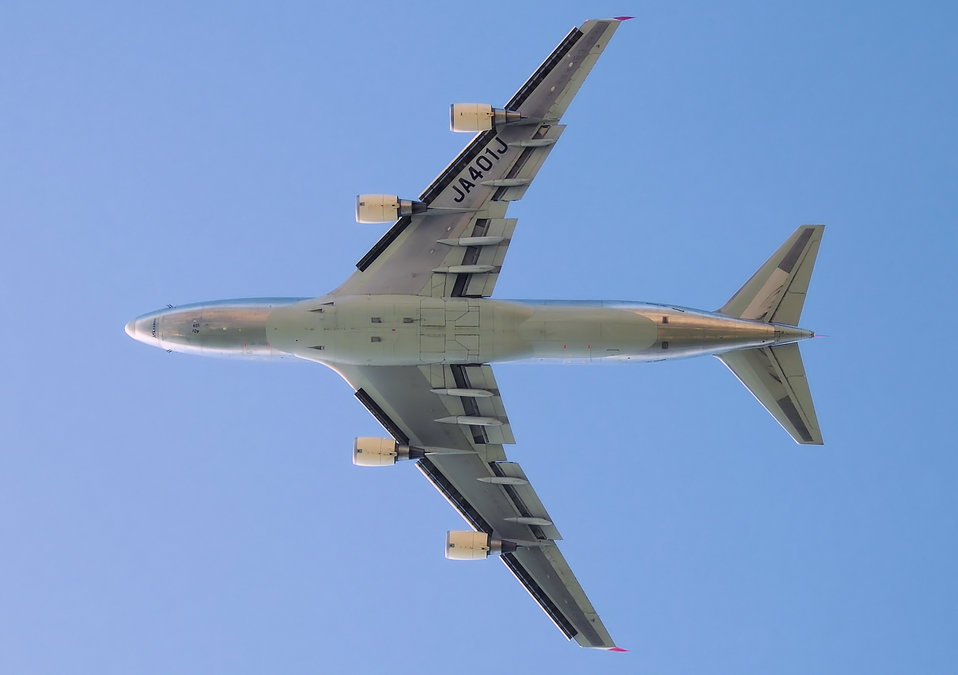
JALCargo Boeing 747-400 (JA401J) takes off from London Heathrow Airport, England. The undercarriages have fully retracted. To take this picture I stood on a footpath exactly under the take-off route of the aircraft. I waited for the aircraft to be exactly overhead and pressed the shutter button.